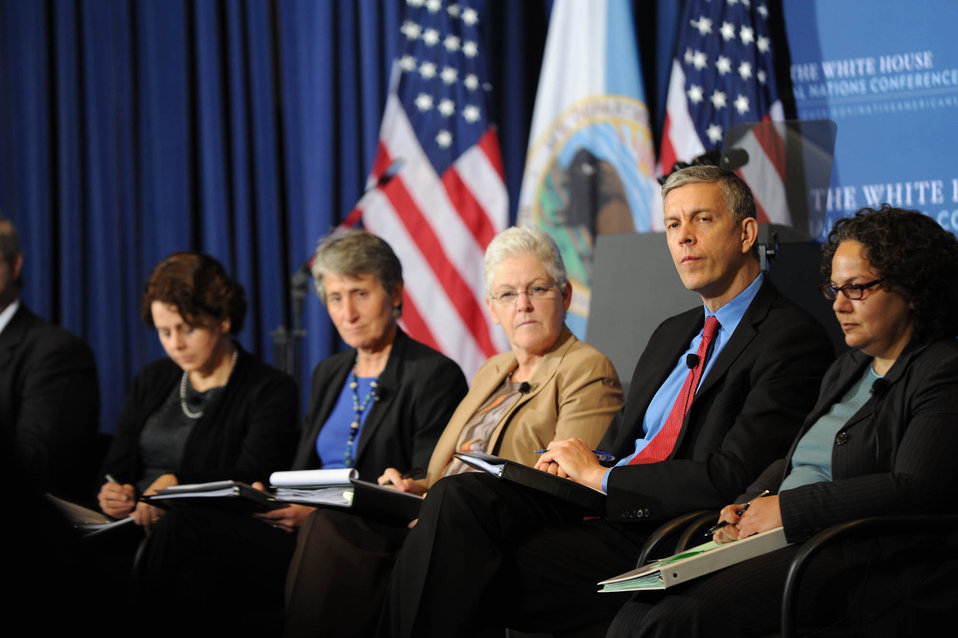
November 13, 2013 - Administrator McCarthy attends White House Tribal Conference

Administrator McCarthy joined President Obama and other administration officials at the White House Tribal Conference on November 13, 2013. The Conference was attended by leaders of 566 federally recognized tribes and members of the White House Council on Native American Affairs.